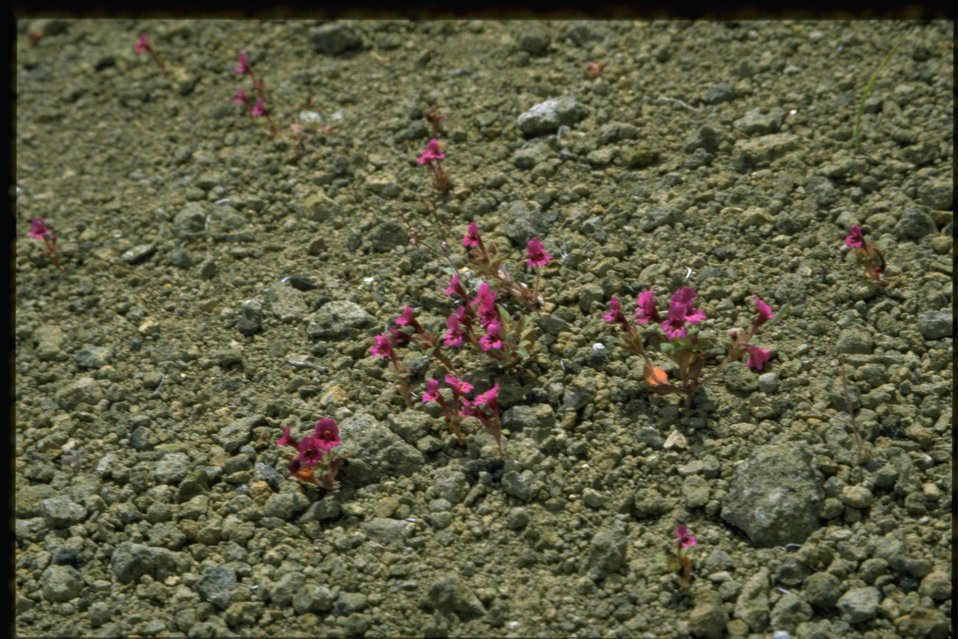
Far shot of Cusick's monkey flower, Minulus cusickii.